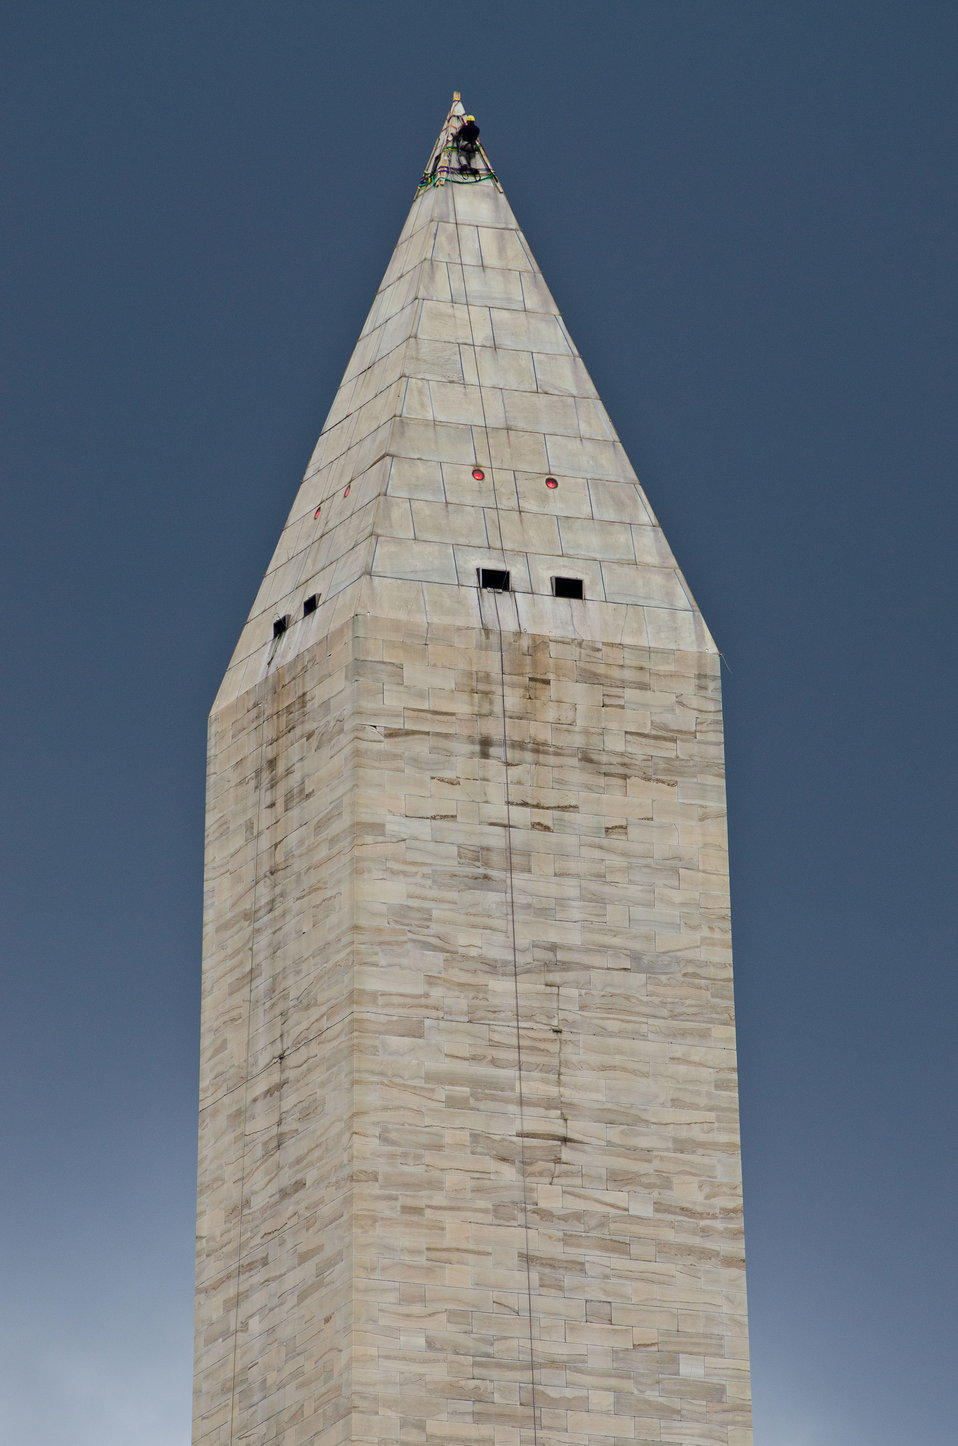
View from the U.S. Department of Agriculture Whitten Building of Dave Megerle, completing a day of rigging setup on the tip of the Washington Monument on Tuesday September 27, 2011. The rigging will be used by a four-person that will rappel down the four sides of the monument and help document damage from the August 23, 2011 5.8-magnitude earthquake and following storm weather. They will also fill cracks with sealant to help protect it from water and ice damage until repairs can be completed.